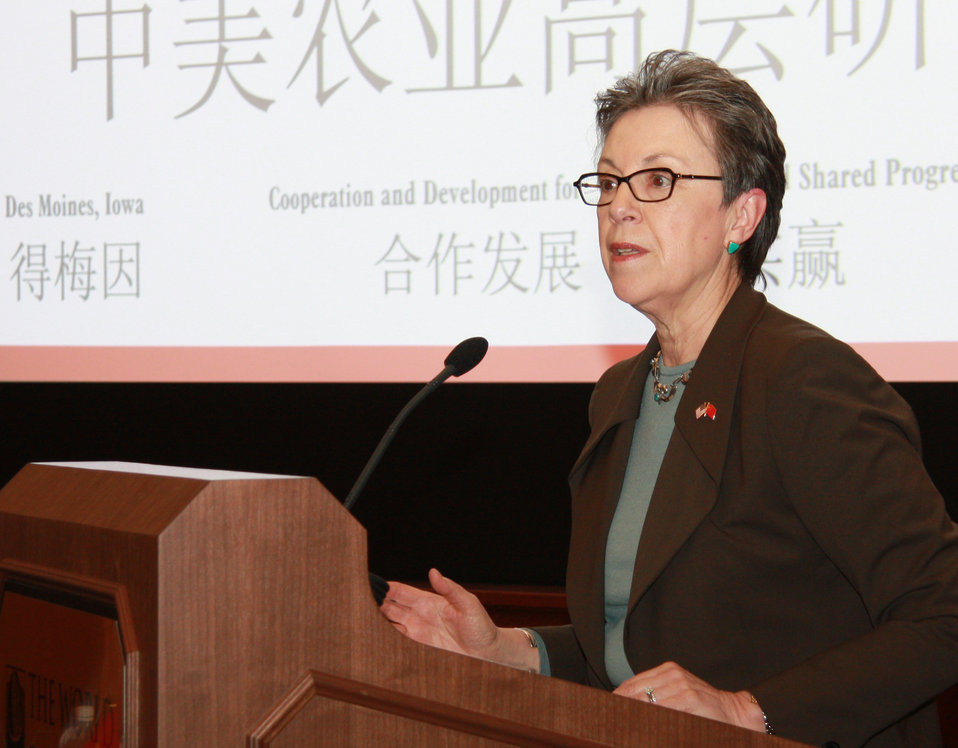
Undersecretary for Research, Education and Economics Dr. Catherine Woteki made remarks at the U.S.-China Agricultural Symposium held at the World Food Prize Hall of Laureates, Des Moines, IA, on Thursday, February 16, 2012. The symposium focused on bilateral cooperation in the areas of food safety, food security and sustainable agriculture, as well as enhanced business relationships between the two countries.